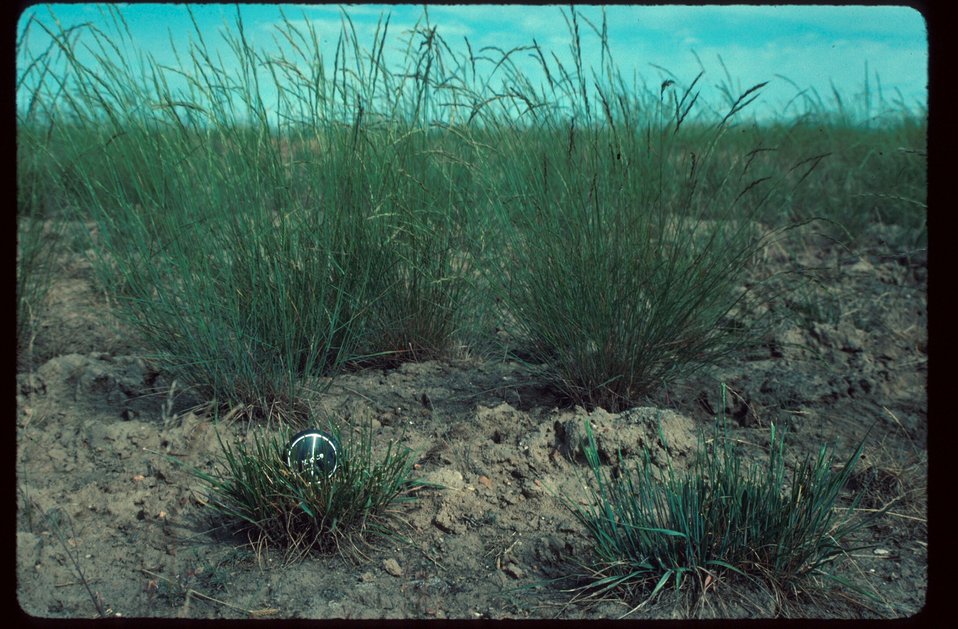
Blue Bunch Wheat Grass Range Restoration Project